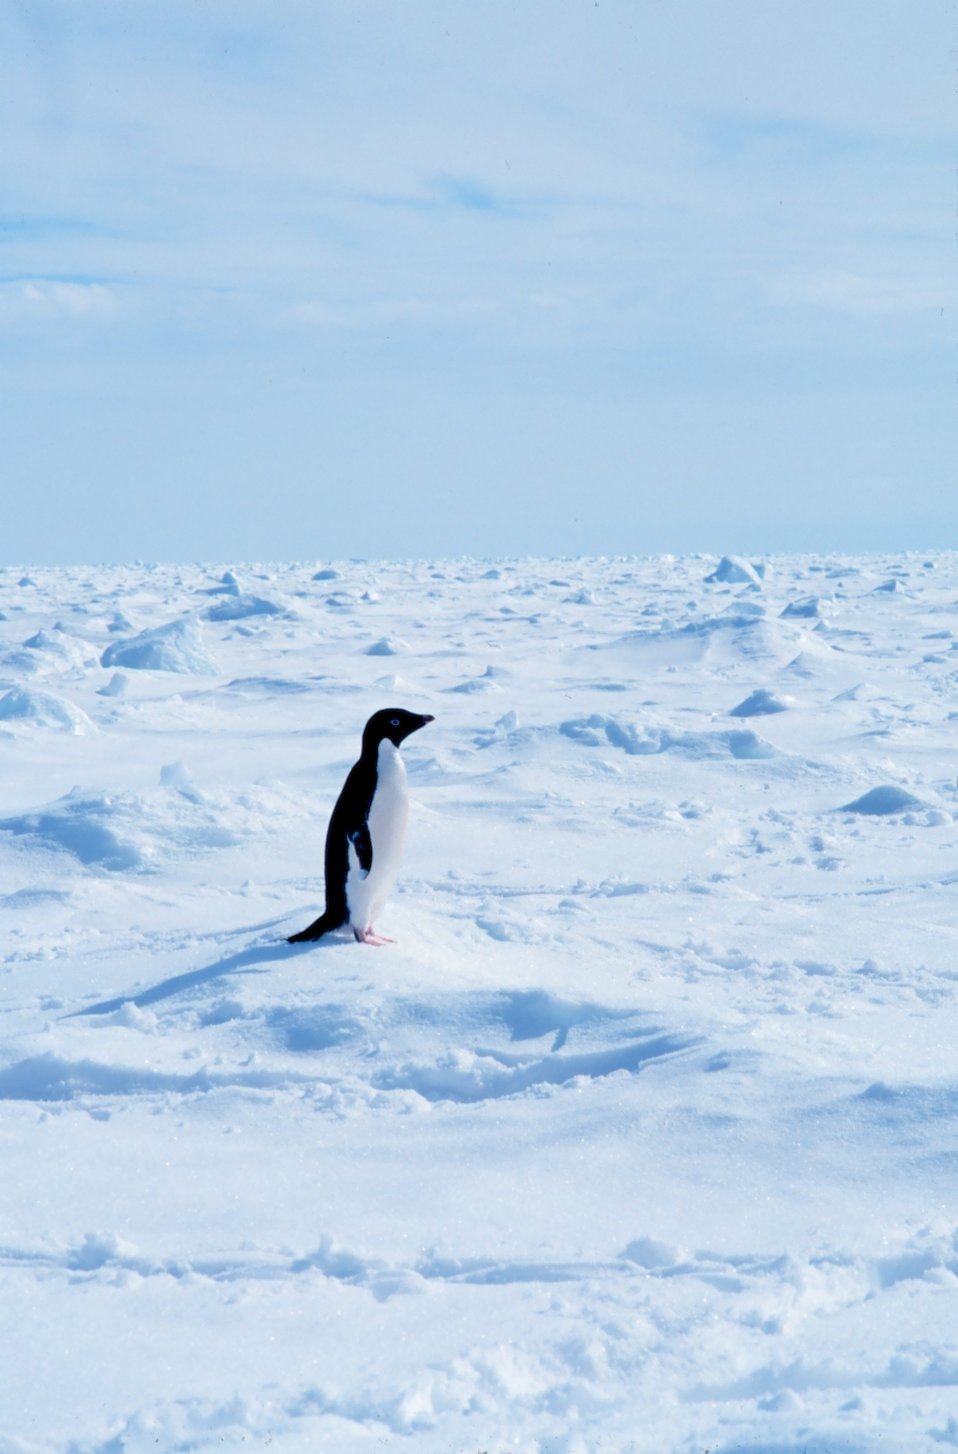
Adelie penguins walking on sea ice in the Ross Sea.